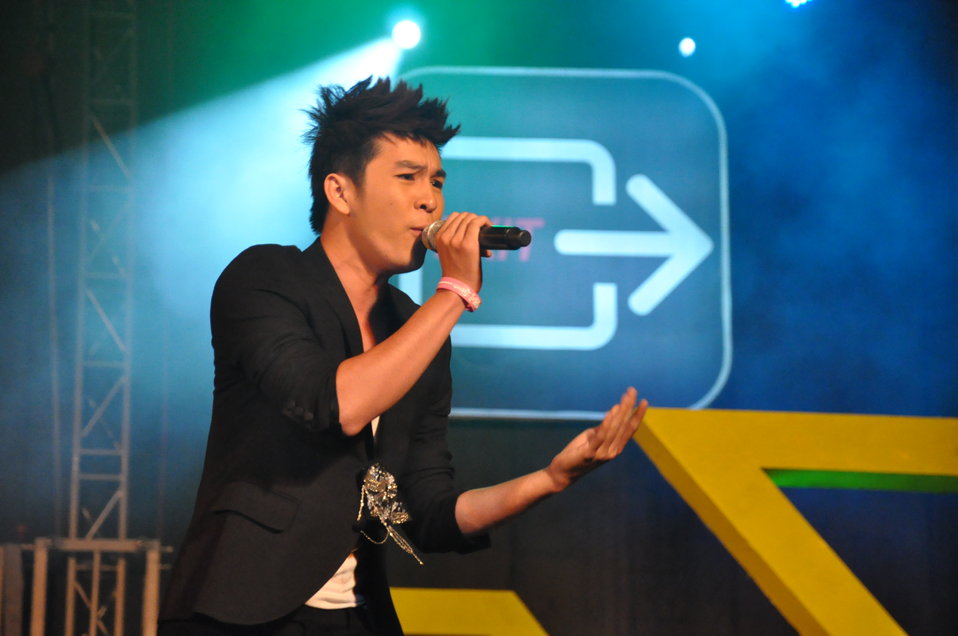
USAID and MTVEXIT concert in Can Tho

Concert in Can Tho against human trafficking, April 10, 2010